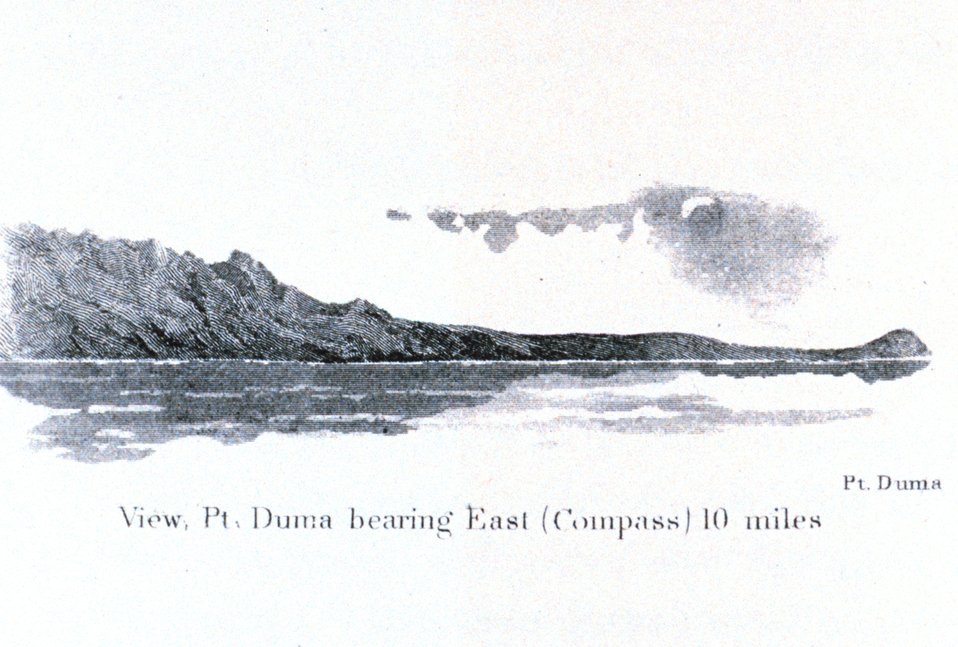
A view of Point Duma, today known as Point Dume, just to the east of Malibu. In: Pacific Coast. Coast Pilot of California, Oregon, and Washington Territory In: Pacific Coast. Coast Pilot of California, Oregon, and Washington Territory . By George Davidson, 1869. P. 15. Library Call Number VK947.D4 1869.